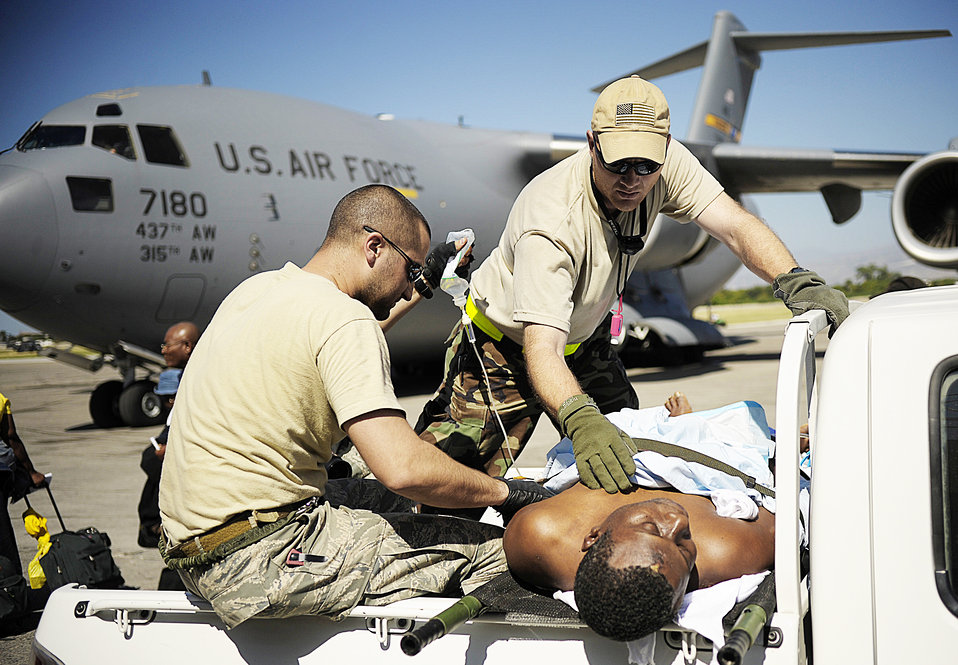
Haitian relief efforts

Master Sgt. Douglas Brook and Tech. Sgt Nicholas Wentworth, Air Force Special Operations Command, perform medical care to a Haitian man at the Toussaint L'Ouverture International Airport in Port-au-Prince, Haiti, Jan. 18, 2010. The man was injured in the earthquake that rocked the country Jan. 12, 2010. The Airmen are certified emergency medical technicians.